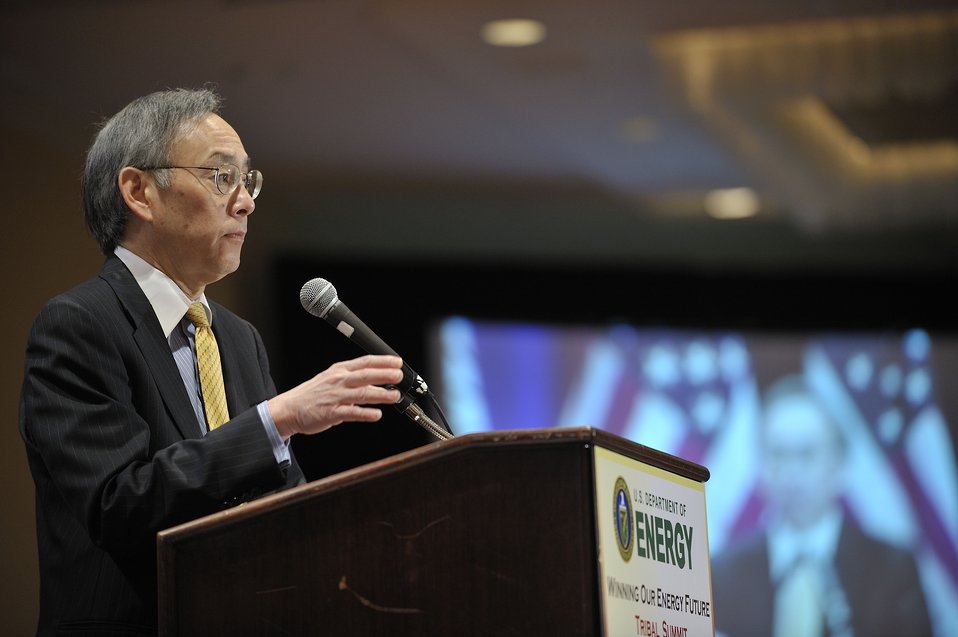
Tribal Energy Summit

Secretary Chu addresses questions from the audience of tribal leaders